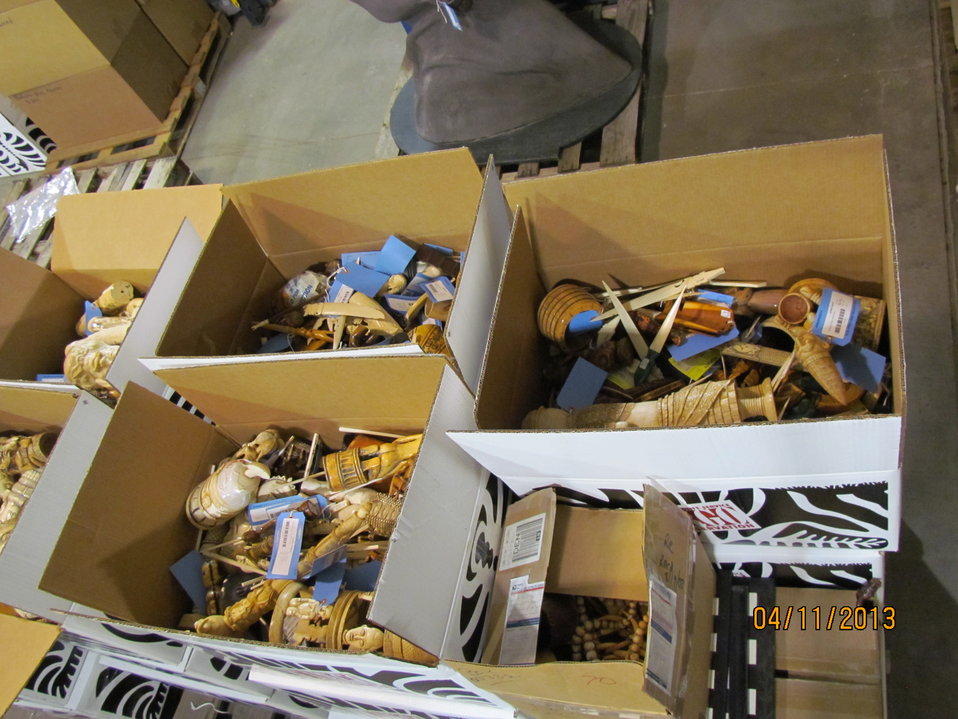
Boxes of small ivory pieces